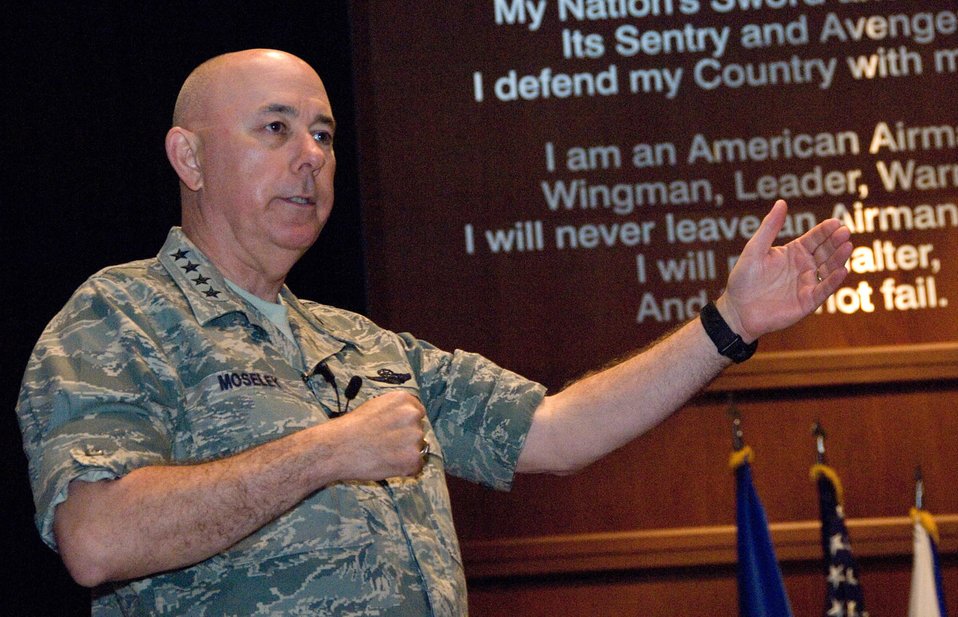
Gen Moseley Briefs Senior Enlisted Leaders Summit

The 18th Chief of Staff of the Air Force, General T. Michael Moseley, addresses more than 300 chief master sergeants during the Senior Enlisted Leader Summit at Maxwell Air Force Base's Gunter Annex, Ala., May 21. General Moseley spoke with command chief master sergeants, career field managers and other key senior enlisted leaders about the challenges of today's Air Force and the importance of its evolution into the 21st Century.